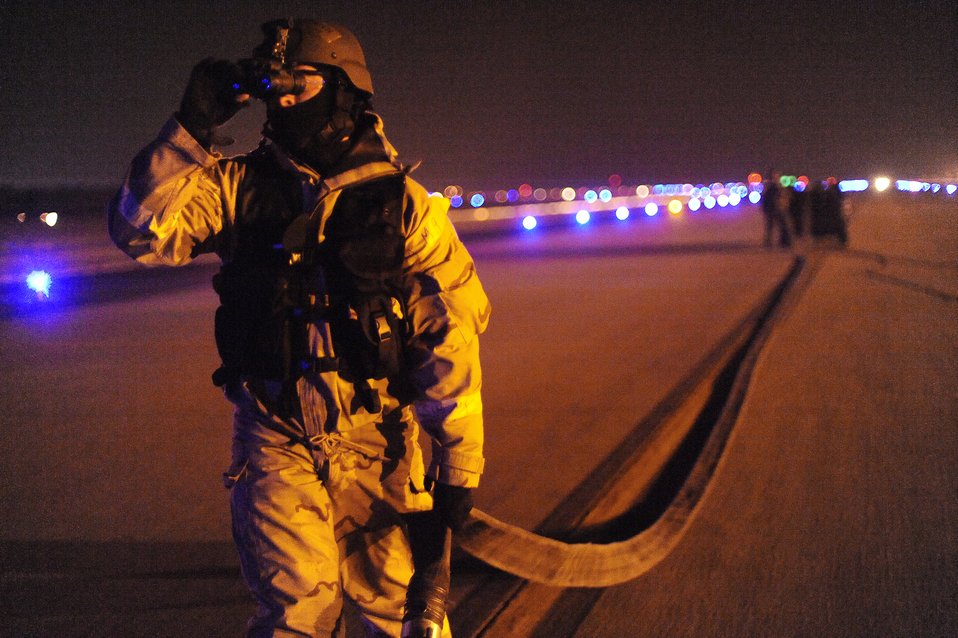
Next up for fuel!

Senior Airman Robert Hofman holds a refueling hose during an operational readiness exercise scenario, Jan. 9, 2010, at Hurlburt Field, Fla. He is assigned to the 1st Expeditionary Special Operations Logistics Readiness Squadron.